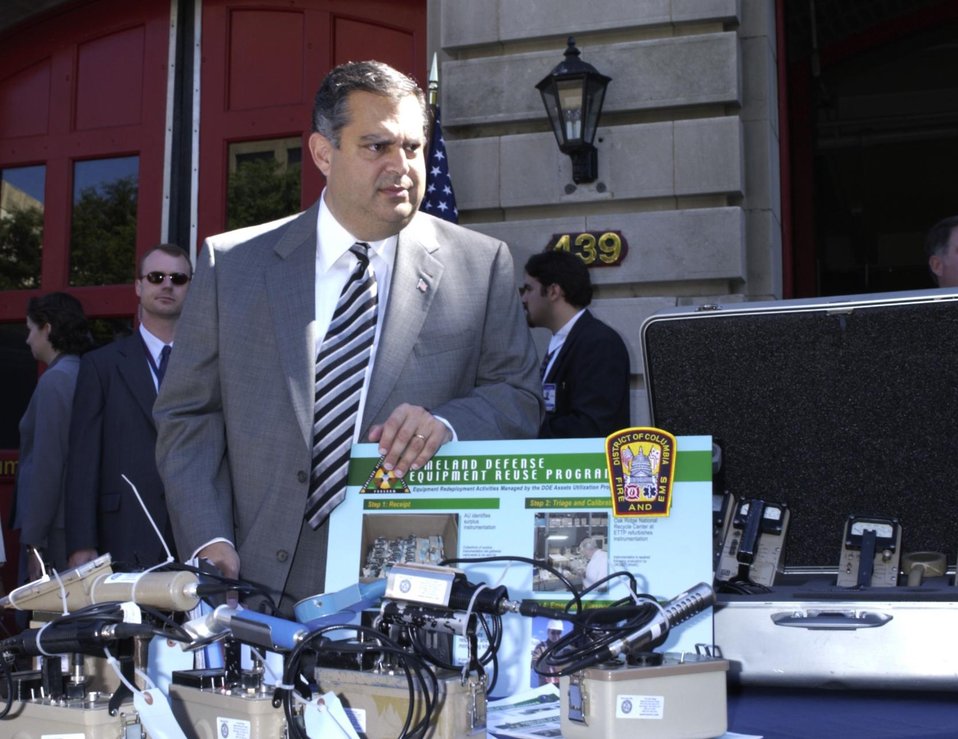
SECRETARY ABRAHAM WITH DISPLAY OF SURPLUS DOE RADIATION DETECTION EQUIPMENT DONATED TO THE FIRE ENGINE CO. #3, WASHINGTON, DC.

DOE AND THE DEPARTMENT OF JUSTICE ARE PARTNERS IN A COOPERATIVE PILOT PROJECT, CALLED THE HOMELAND DEFENSE EQUIPMENT REUSE PROGRAM. SURPLUS RADIOLOGICAL DETECTION INSTRUMENTATION AND OTHER EQUIPMENT IS DONATED TO STATE AND LOCAL EMERGENCY FIRST RESPONDER AGENCIES NATIONWIDE TO ENHANCE THEIR DOMESTIC PREPAREDNESS CAPABILITIES.